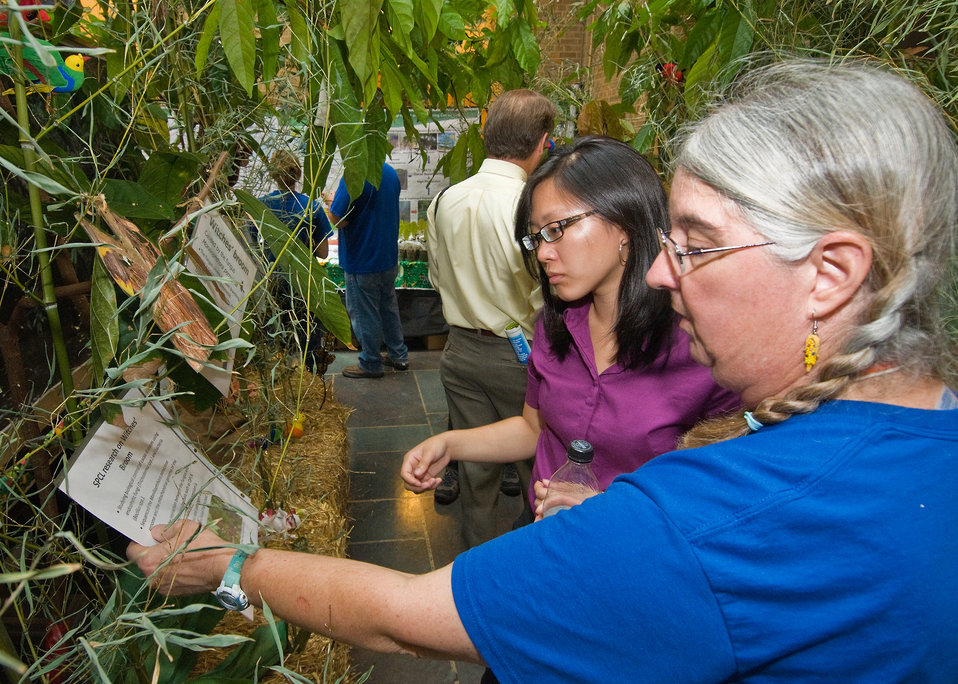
Esther Lin (left), Office of the Executive Secretariat listens to Mary Strem (right), Support Scientist, Sustainable Perennial Crop Laboratory, Agricultural Research Service explain the different diseases of cacao plant the lab is studying at the Beltsville Agricultural Research Center in Beltsville, Maryland. The Sustainable Perennial Crop Laboratory Service was one of many exhibits at the, Celebrating Science Bed Bugs...Chocolate...and Beyond' event held at the United States Department of Agriculture, in Washington, DC, on Monday, October 4, 2010. USDA Photo 10di1515-31 by Bob Nichols.